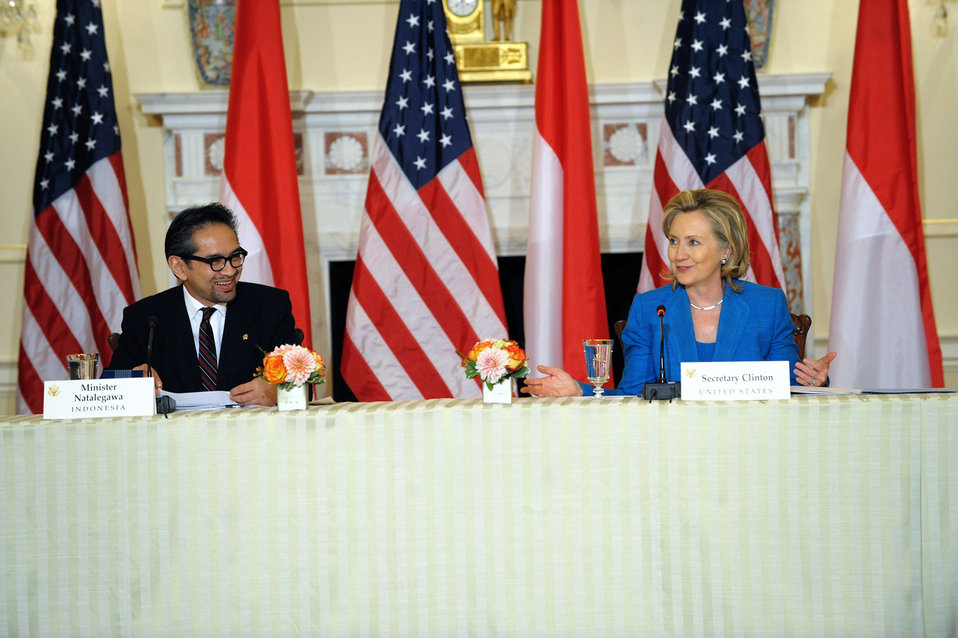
Secretary Clinton Holds a Joint Press Availability With Indonesian Foreign Minister Natalegawa

U.S. Secretary of State Hillary Rodham Clinton holds a joint press availability with Indonesian Foreign Minister Marty Natalegawa following the first U.S.-Indonesian Joint Commission meeting at the U.S. Department of State in Washington, D.C., on September 17, 2010.